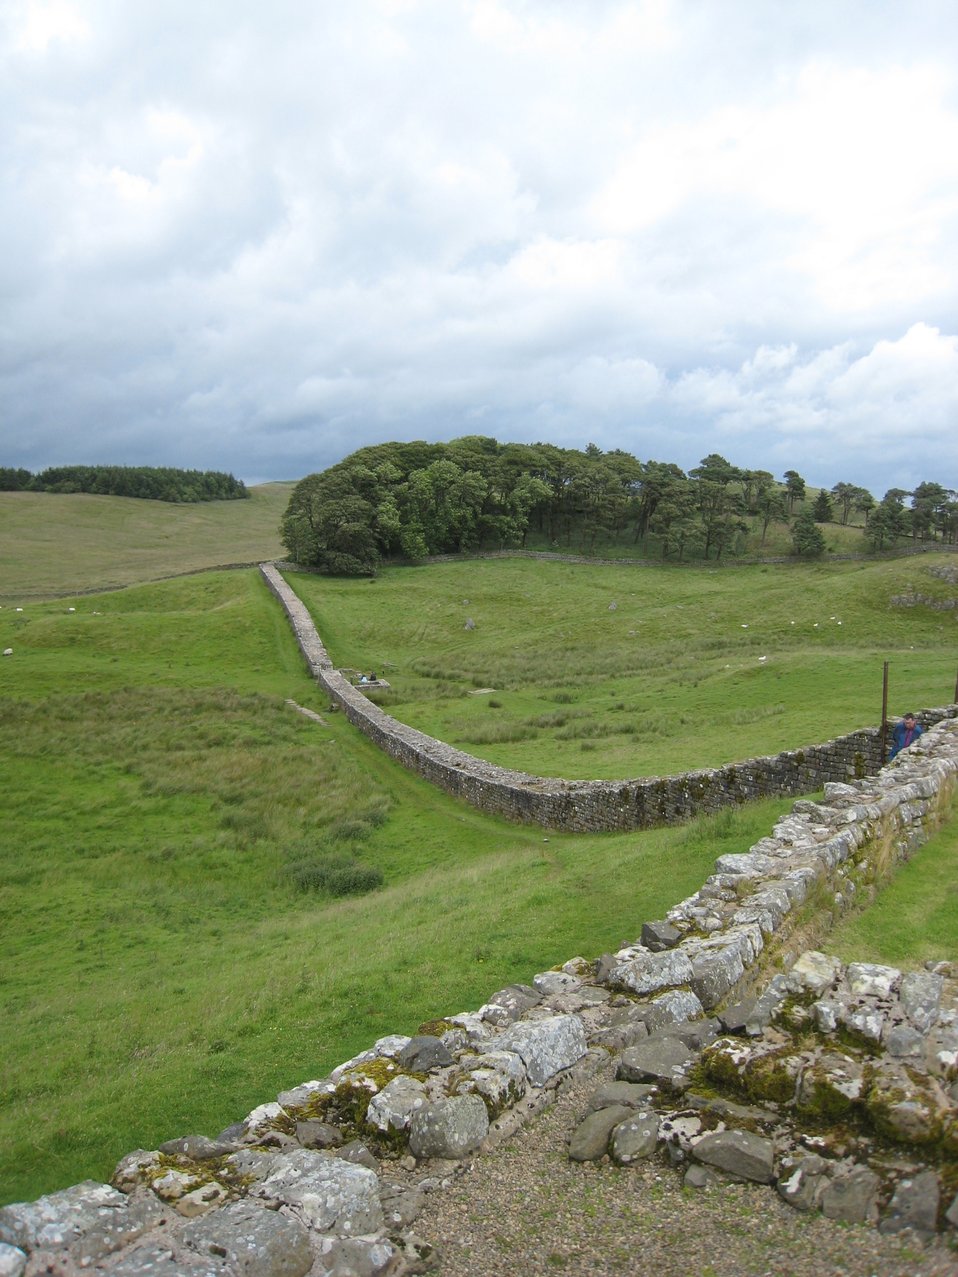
A stretch of en:Hadrian's Wall viewed from en:Vercovicium near en:Housesteads in en:Northumberland, Date: 2007 Deutsch: Blick vom Ostturm des Nordtores am Kastell Housesteads auf den nach Osten verlaufenden Hadrianswall. Aufgenommen 2007